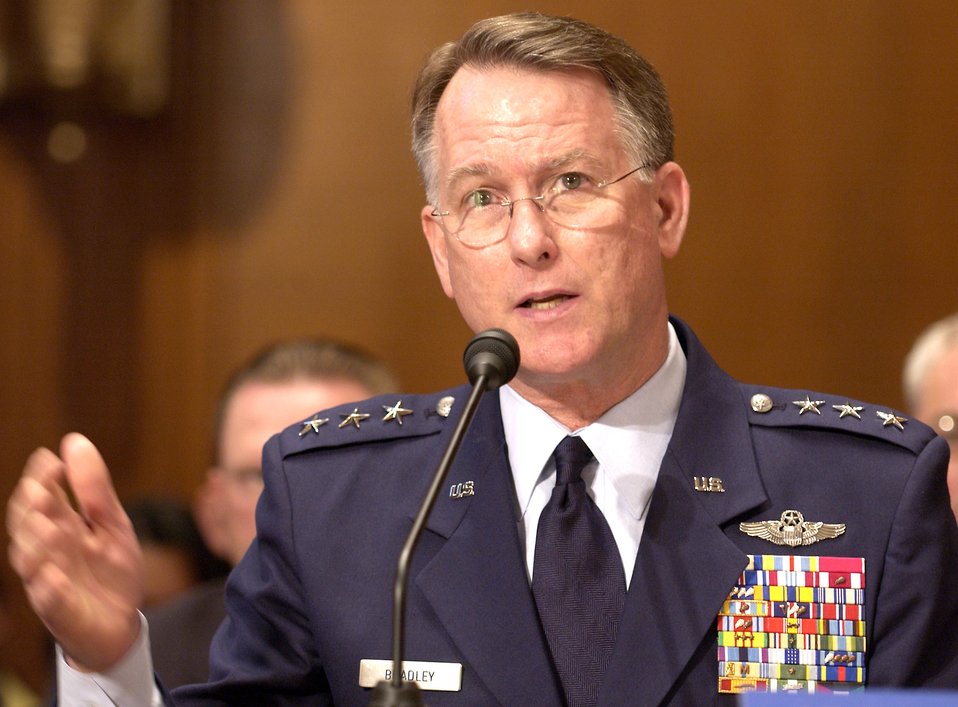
Guard, Reserve leaders testify on Capitol Hill

WASHINGTON -- Lt. Gen. John A. Bradley, commander of Air Force Reserve Command, answers questions during a hearing of the Senate Appropriations Committee Defense Subcommittee on April 20. The subcommittee heard testimony to examine proposed budget estimates for the Air National Guard and Air Force Reserve fiscal 2006 budget.